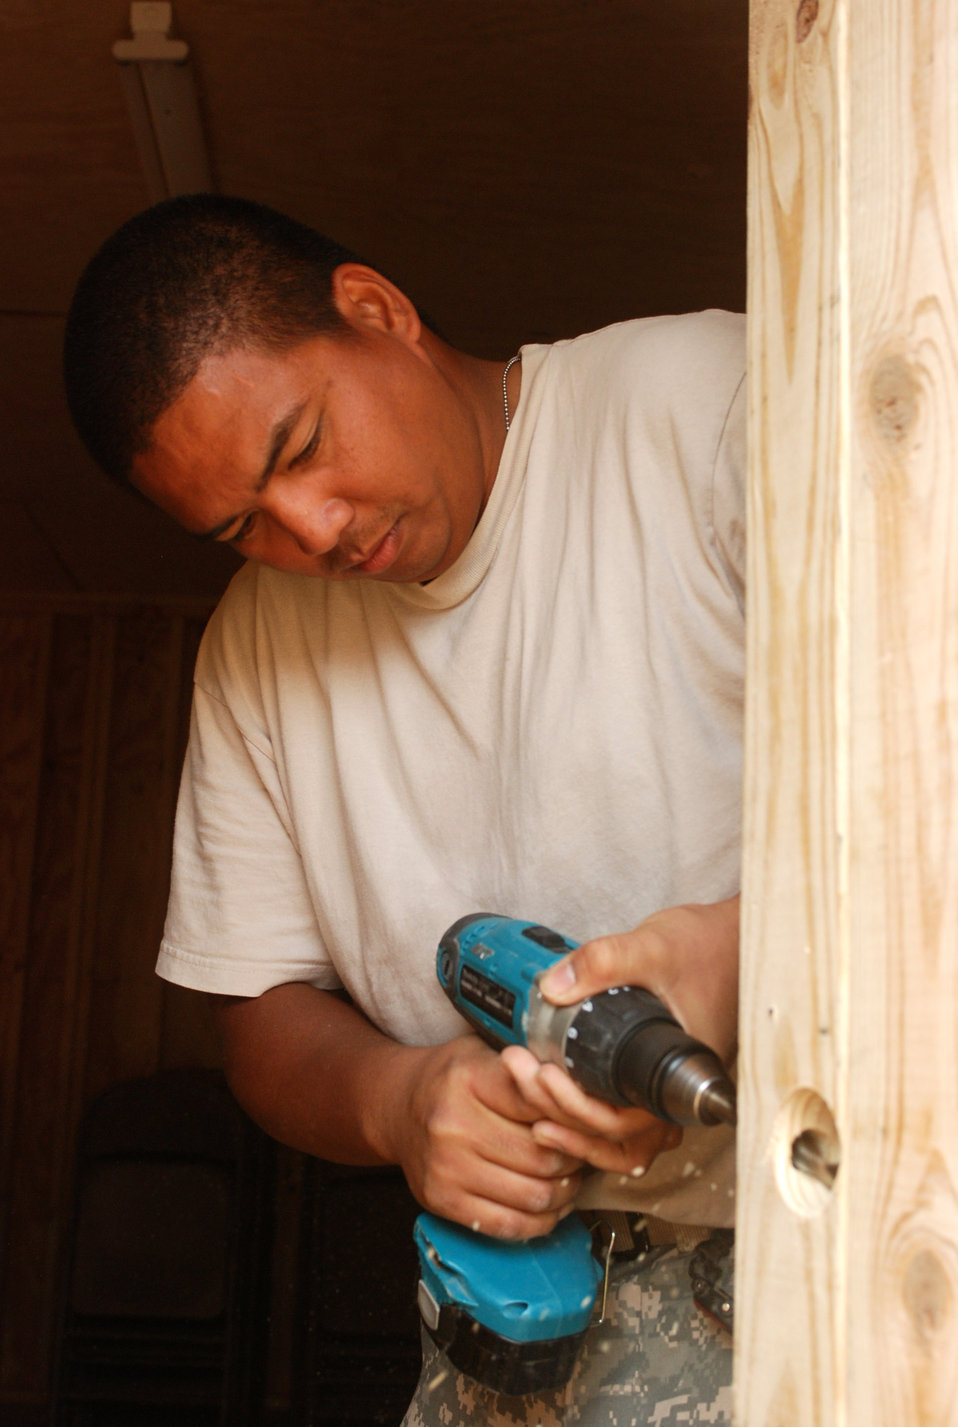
Airmen revamp Iraqi police training facility

Staff Sgt. Jeffrey Orina drills out a hole for a handle on the door of the new classroom at the Iraqi police training site at Balad Air Base, Iraq. The squadron revamped the facility to make the training as real as possible for the students. Sergeant Orina, 732nd Expeditionary Logistics Readiness Squadron, Det. 6 carpenter, is deployed from Beale Air Force Base, Calif.